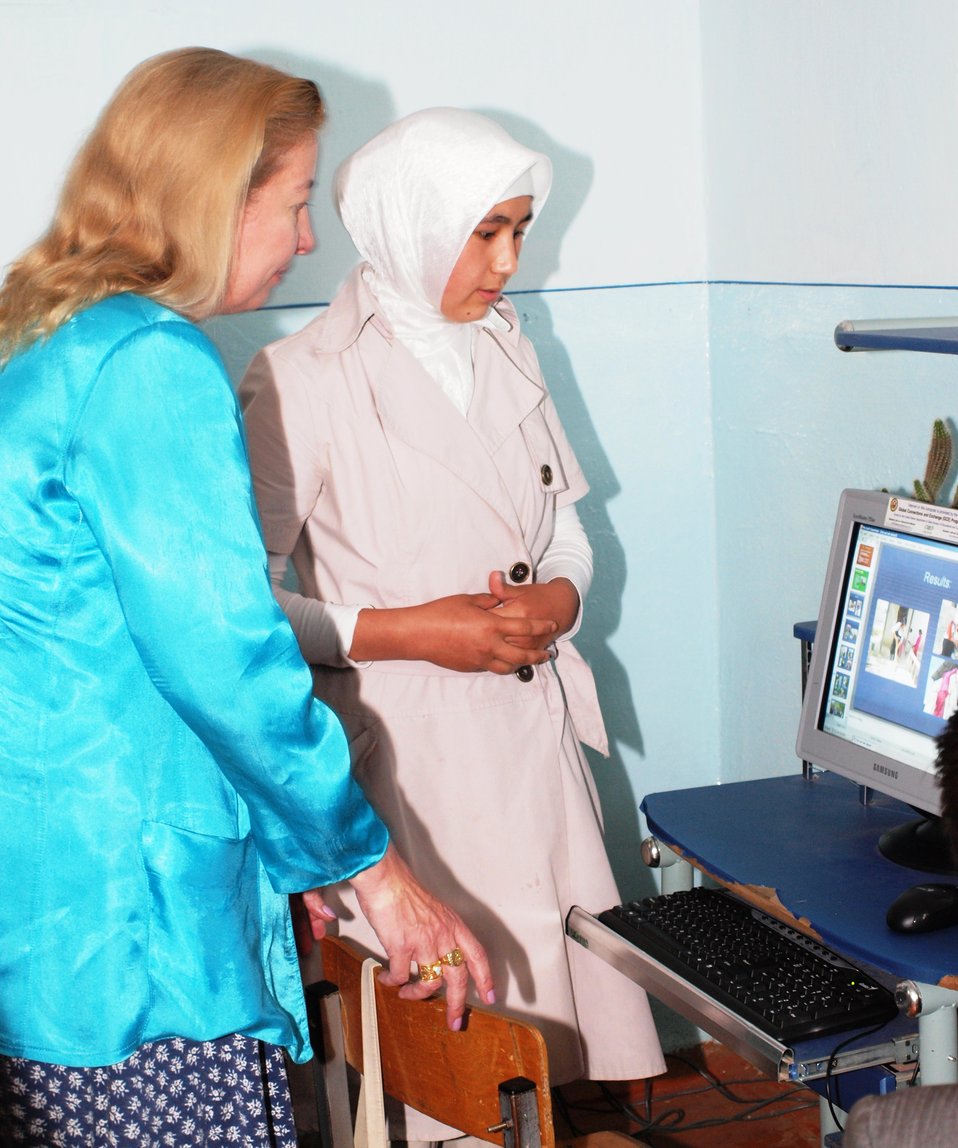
Ambassador Gfoeller Visits an American Pilot School

U.S. Ambassador to Kyrgyzstan Tatiana C. Gfoeller visits an American Pilot School supported by the U.S. Embassy Bishkek School in the village of Shark outside of Osh, Kyrgyzstan, on June 2, 2010.